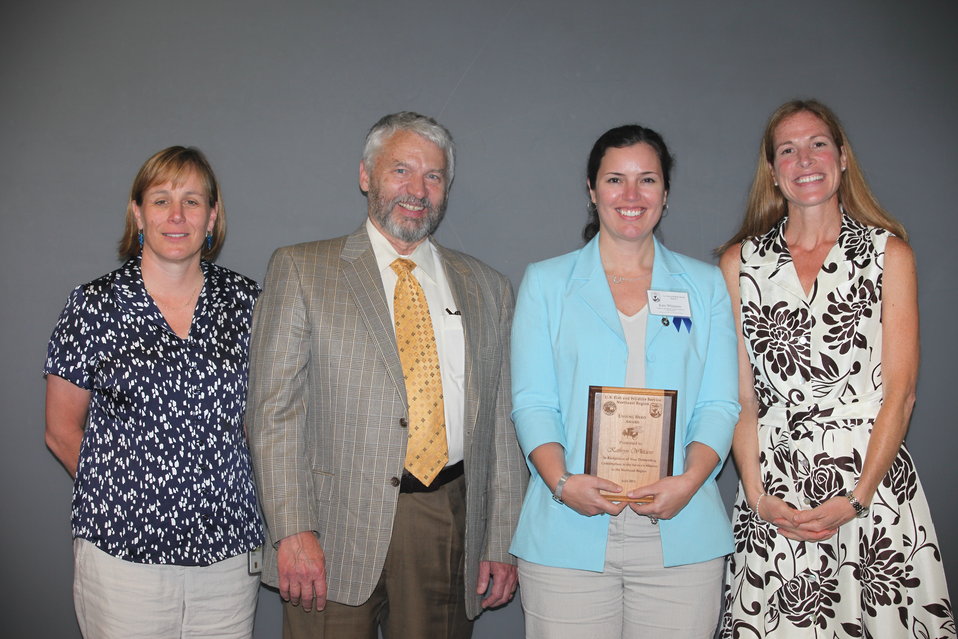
Kathryn Whitacre of the Regional Office- Budget and Administration was awarded the Region 5 Unsung Hero Award.
From left to right: Deputy Regional Director Deb Rocque, Deputy Director Rowan Gould, Kathryn Whitacre and Regional Director Wendi Weber